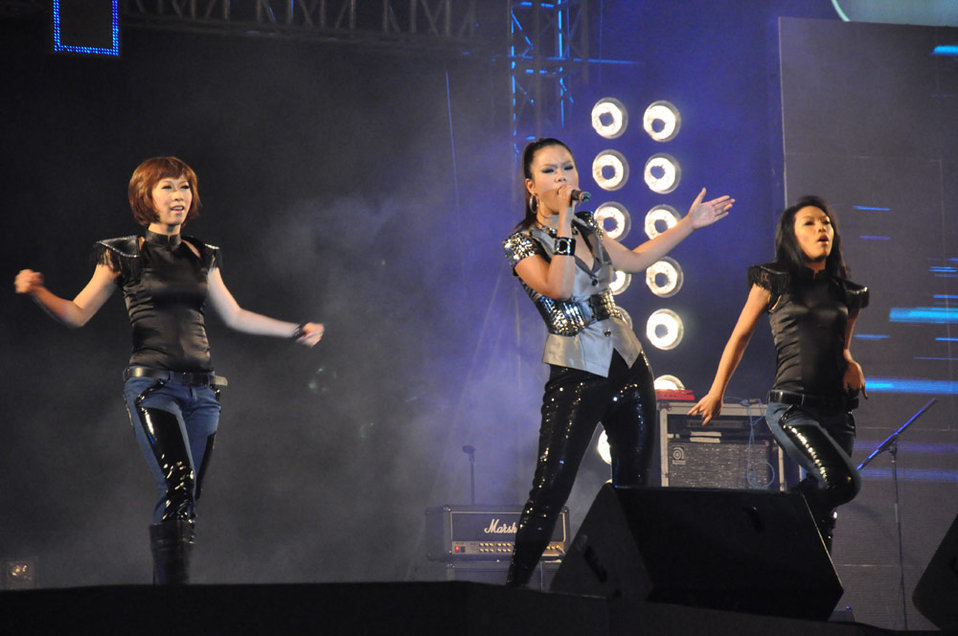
USAID Vietnam and MTVEXIT against Human Trafficking

Hanoi concert, March 27, 2010